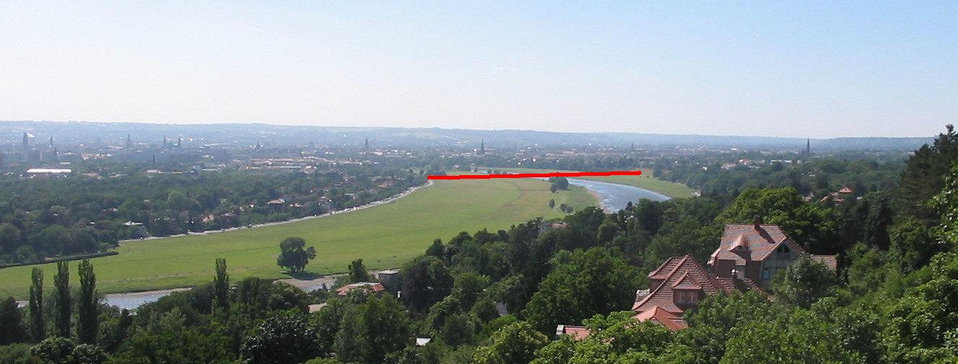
Das Elbtal in Dresden, mit eingezeichnetem geplanten Standort der Waldschlösschenbrücke. Fotografiert von der Terrasse des 'Luisenhof' in Dresden Weißer Hirsch